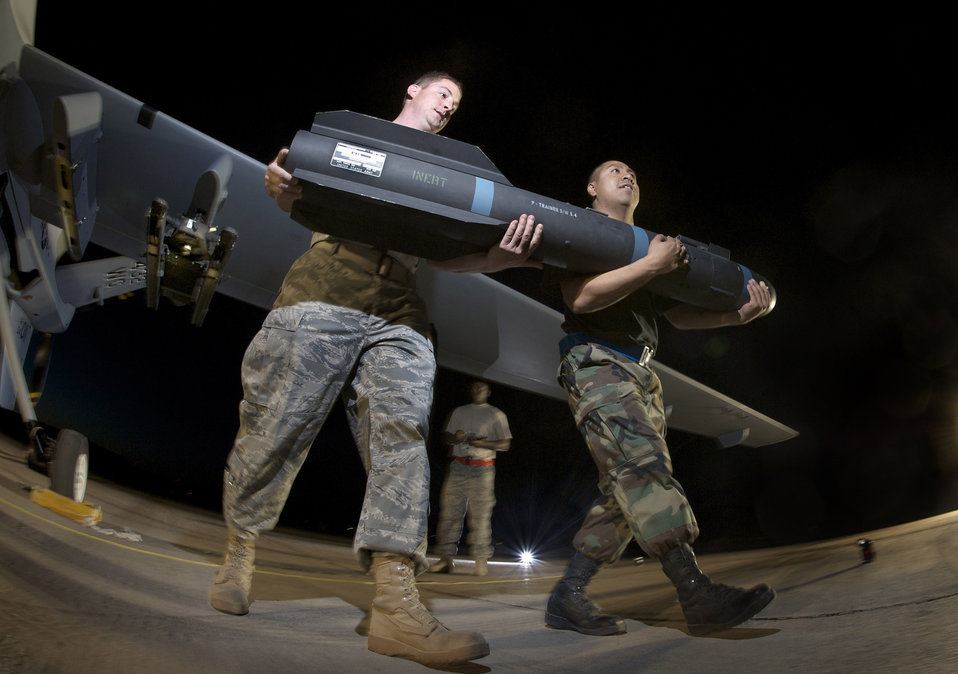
One step at a time

Tech Sgt. Michael Stewart (left) and Senior Airman Valero Mendoza carry a practice AGM-114P Hellfire missile away from a MQ-9 Reaper June 19 at Creech Air Force Base, Nev. Staff Sgt. Jawann Wilson is in the background.